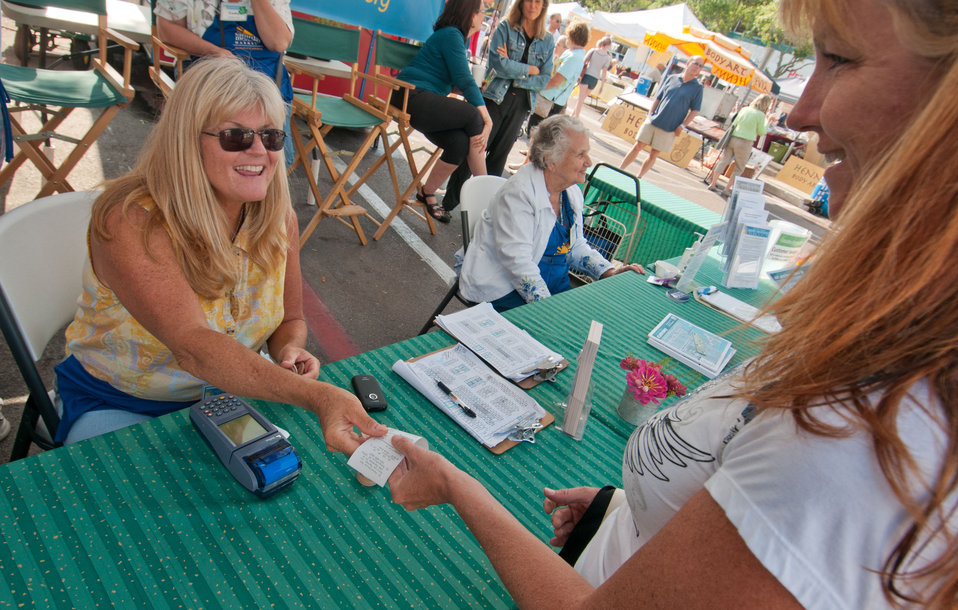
Gale Eggman founder/market manager hands Joney O'Hare, right, her receipt after using the U.S. Department of Agriculture (USDA) Supplemental Nutrition Assistance Program (SNAP) Electronic Benefits Transfer (EBT) card to withdraw tokens, from her SNAP account balance, at the Saturday Morning Market, in St. Petersburg, FL on April 14, 2012. Worden Farm (www.wordenfarm.com) says, “We at Worden Farm are happy to work with the USDA SNAP The tokens are exchanged with vendors for food, food producing plants or seeds for food producing plants as wanted and available. Vendors then returned to the tokens to the market organizer for an equal dollar amount that is electronically deposited into the vendor’s bank account. Worden Farm is a family farm that provides certified organic produce to Southwest Florida through community supported agriculture (CSA) membership programs and retail sale at several farmer’s (community) markets. Depending on the state, EBT cards can also hold value from other food and nutrition partners that can add a certain value or provide a certain degree of match to the value of other programs add to the card.